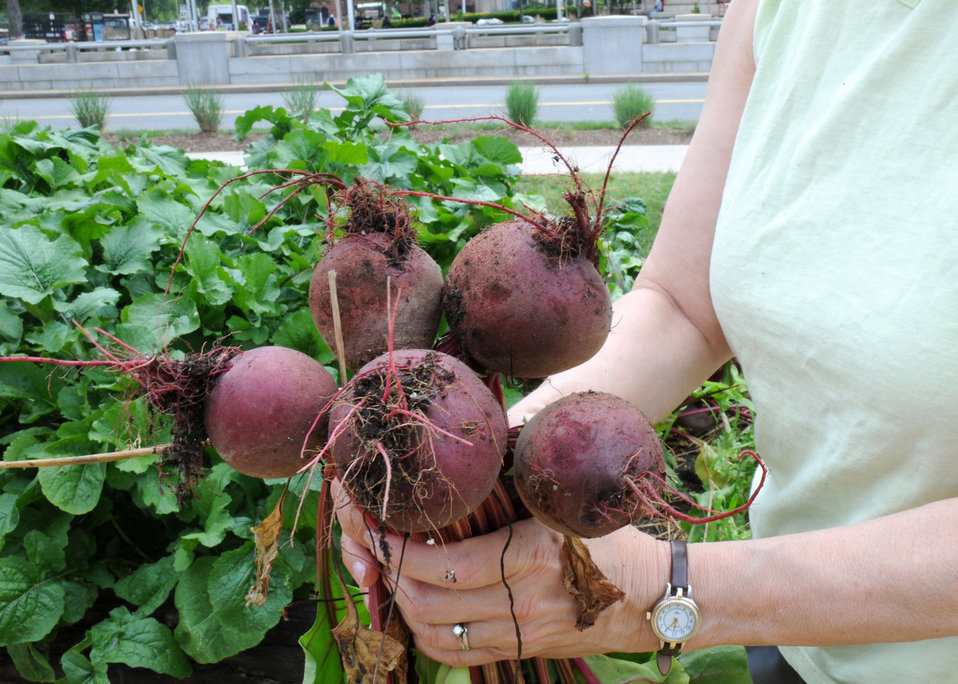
A volunteer holds a bouquet of beets harvested from the Department of Agriculture’s People’s Garden in Washington, DC, on Friday, May 28, 2010. All vegetables harvested are donated to local area food banks. USDA photo 10di1384-52.